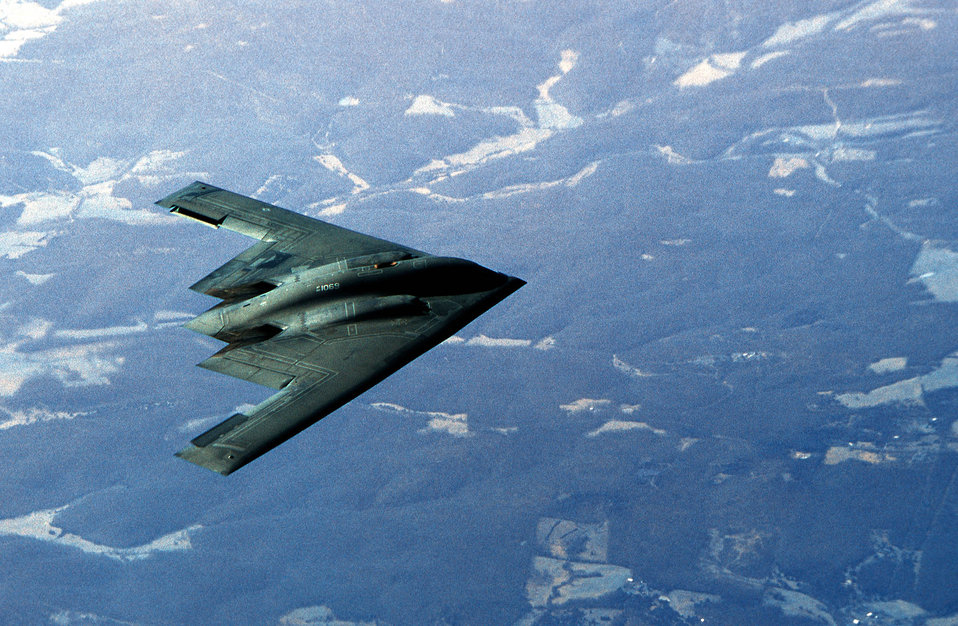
Cruising Spirit

FILE PHOTO -- A B-2 Spirit bomber cruises through the sky after a refueling mission. Air Force aircraft including the B-2, B-1B Lancer, B-52H Statofortress, F-15E Strike Eagle, F-16 Fighting Falcon and AC-130H/U Gunship have flown more than 15 percent of the combat missions over Afghanistan. These aircraft have dropped about 10,000 tons of munitions – more than 75 percent of the Operation Enduring Freedom total.